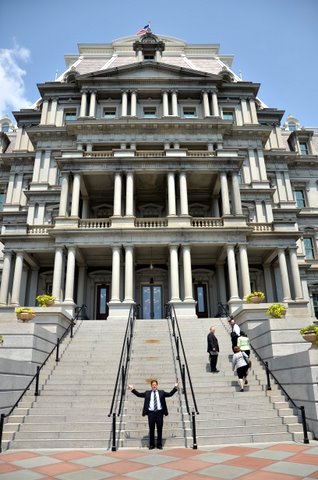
Old Executive Office Bldg

WH 2012 World Hepatitis Day Event